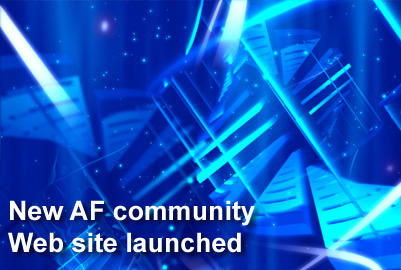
New AF community Web site launched

Air Force officials have launched a new social and informational needs Web site for Airmen, civilians, retirees and their families.